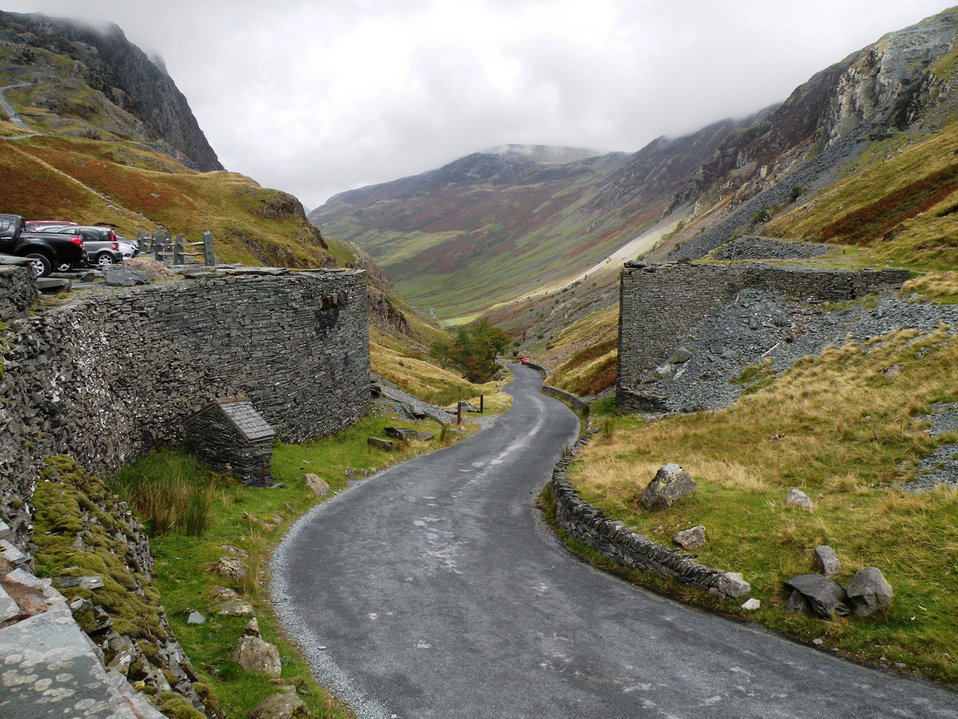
Cumbrian slate mine

Road next to honister pass slate mine.